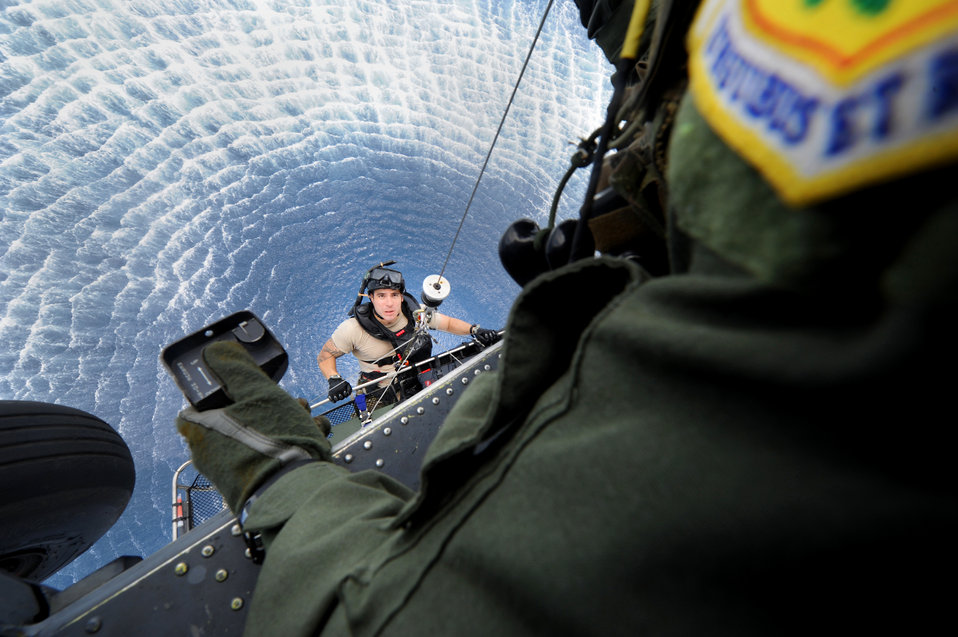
Water lift

Staff Sgt. Jacob Schaumberg is hoisted onboard an HH-60 Pave Hawk by Master Sgt. John Durbin during a joint field-training exercise Sept. 1, 2011, off the coast of Okinawa. Airmen from two squadrons trained together on water survival; search and rescue; close-air support; and maritime defense and interdiction. Schaumberg is a pararescueman assigned to the 31st Rescue Squadron at Kadena Air Base, Japan, and Durbin is a flight engineer and superintendent assigned to the 33rd Rescue Squadron at Kadena AB.